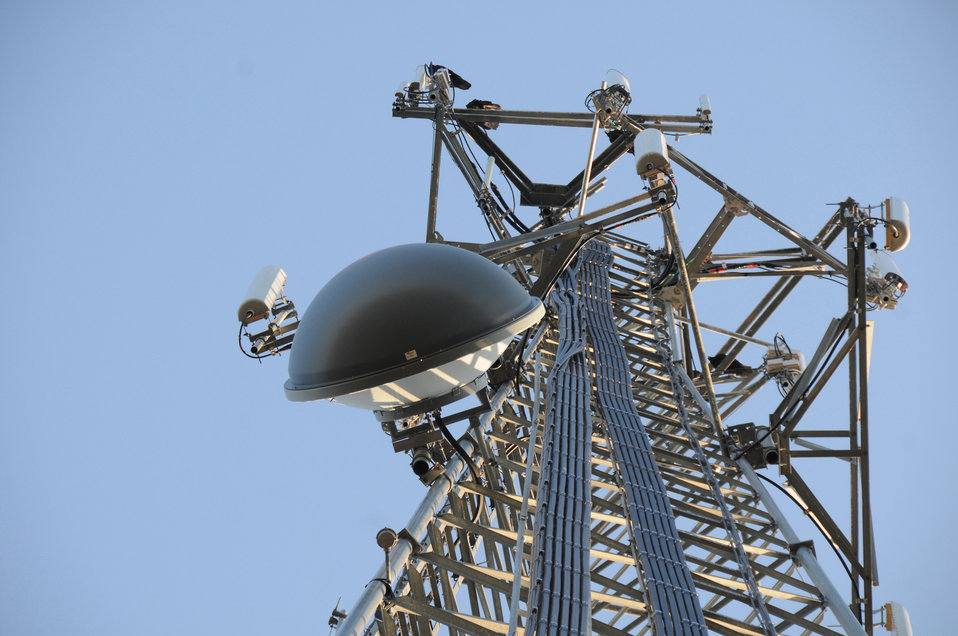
The Hilliary family owned business, which began in 1958 as a telephone service business expanded their business by constructing cell towers such as this one with FIOS capabilities to serve the surrounding communities in Medicine Park, Oklahoma on August 9, 2009. The family received assistance through the U.S. Department of Agriculture’s (USDA) Rural Development (RD) Rural Business Service (RBS).